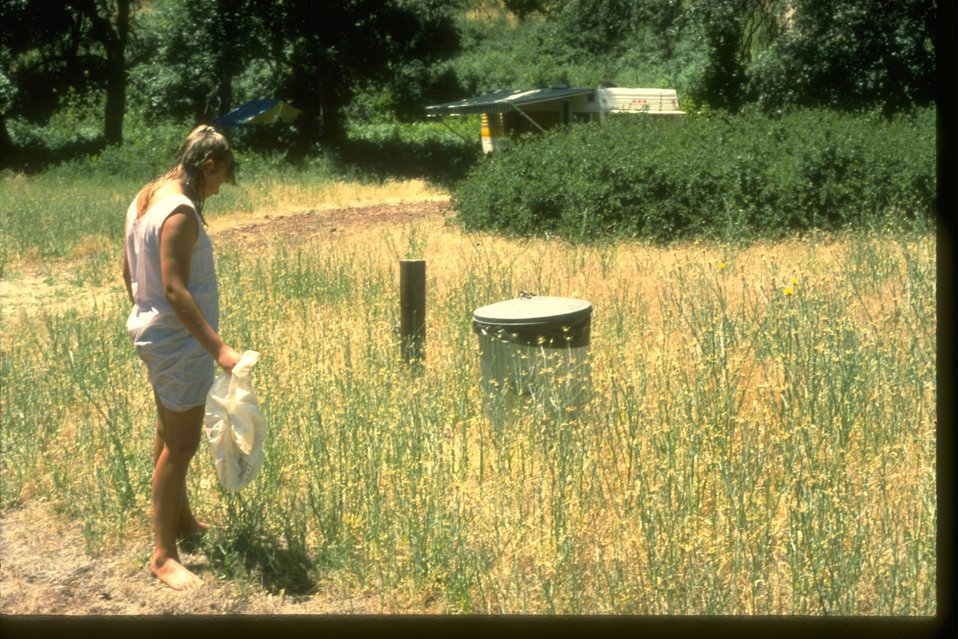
A young lady attempting to get through yellow starthistle to empty garbage at Pit River, California.